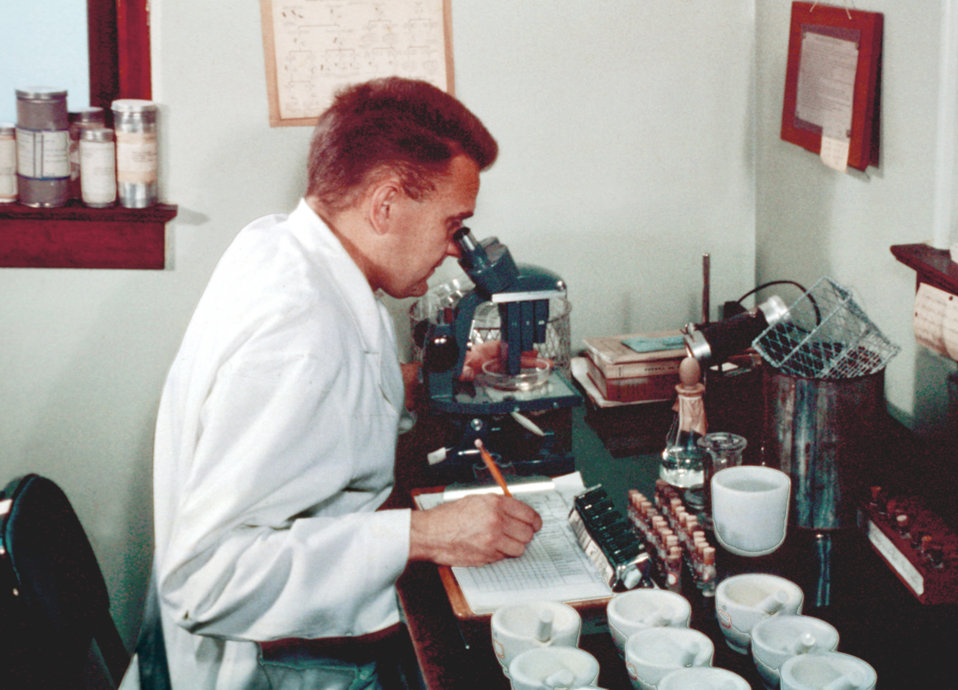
A technologist is carrying out Plague Studies in San Francisco, 1961.